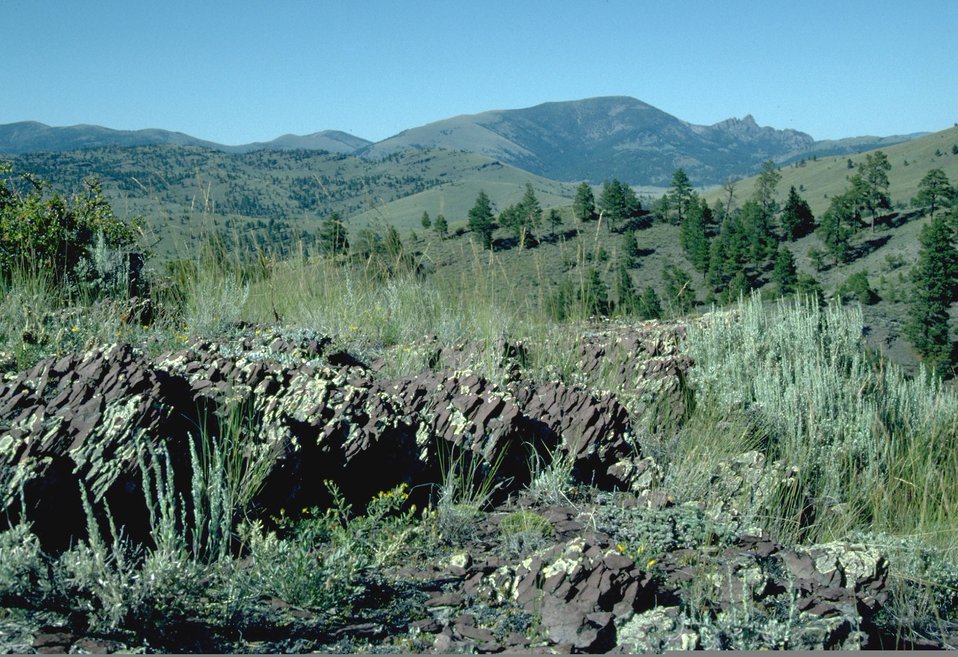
Sleeping Giant area